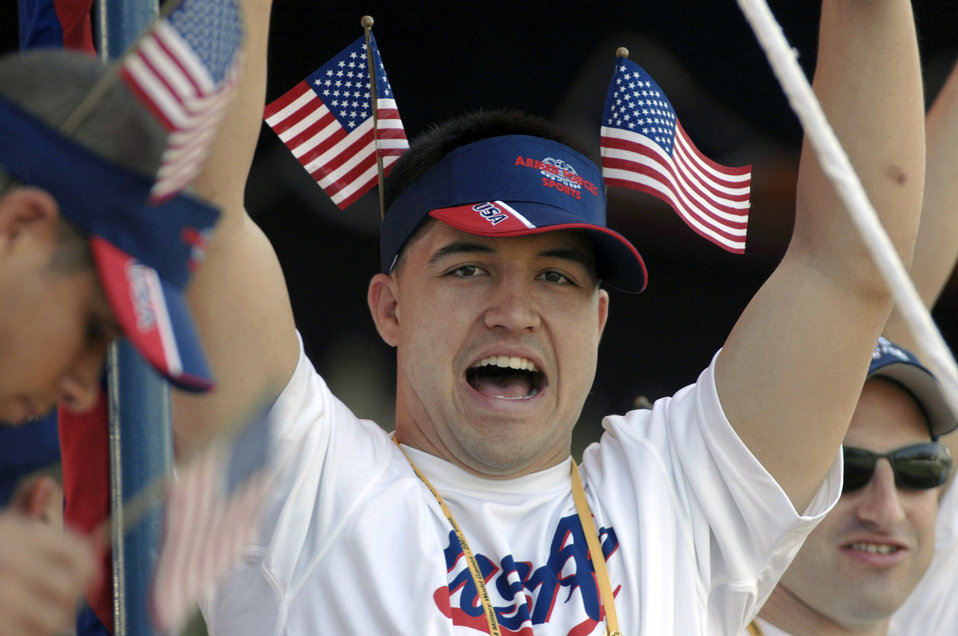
USA! USA!

Mat Lewis cheers on the USA women's soccer team in their match at the Military World Games against the South Korean women's soccer team Oct. 14 in Hyderabad, India. The Conseil Internationale du Sport Militaire's Military World Games event is the largest international military Olympic-style event in the world.